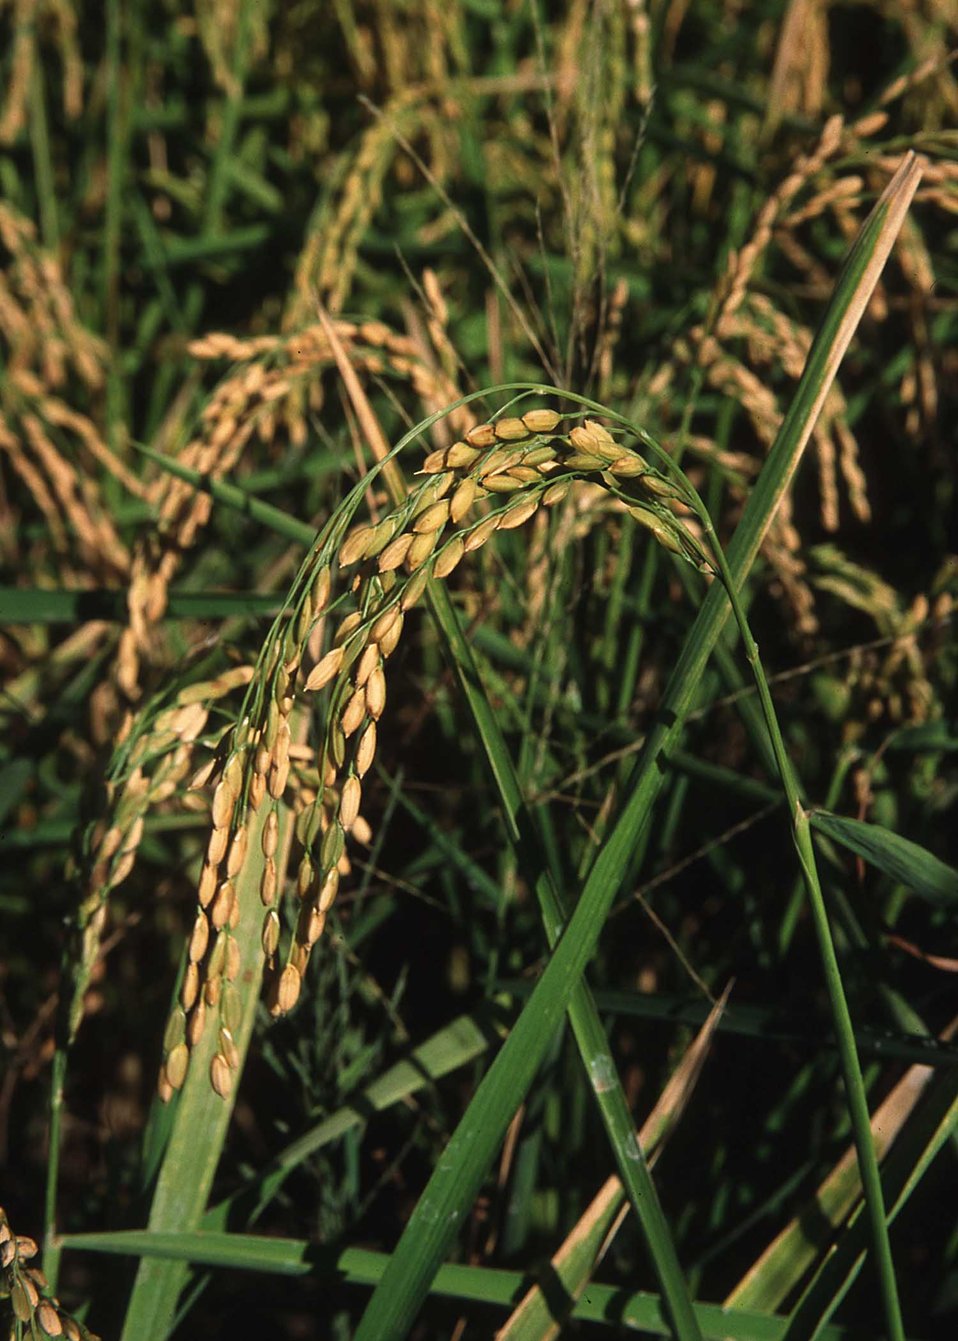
Rice field in Northern California.